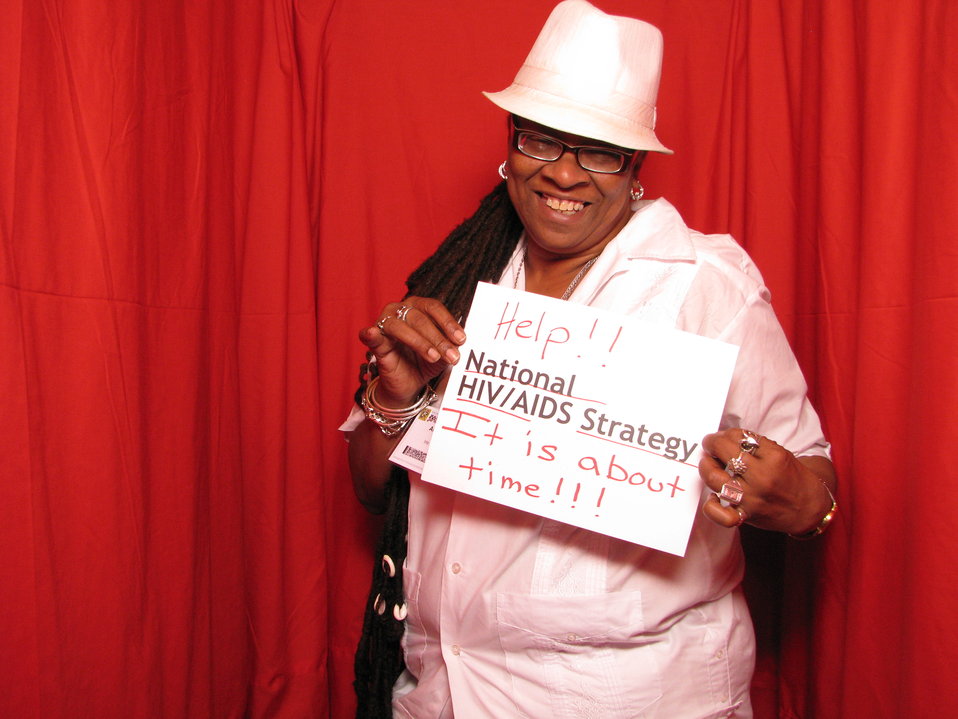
Help!! National HIV/AIDS STrategy. It is about time!!!

From the AIDS.gov photo booth at the U.S. Conference on AIDS, September 2010 (Orlando, FL).